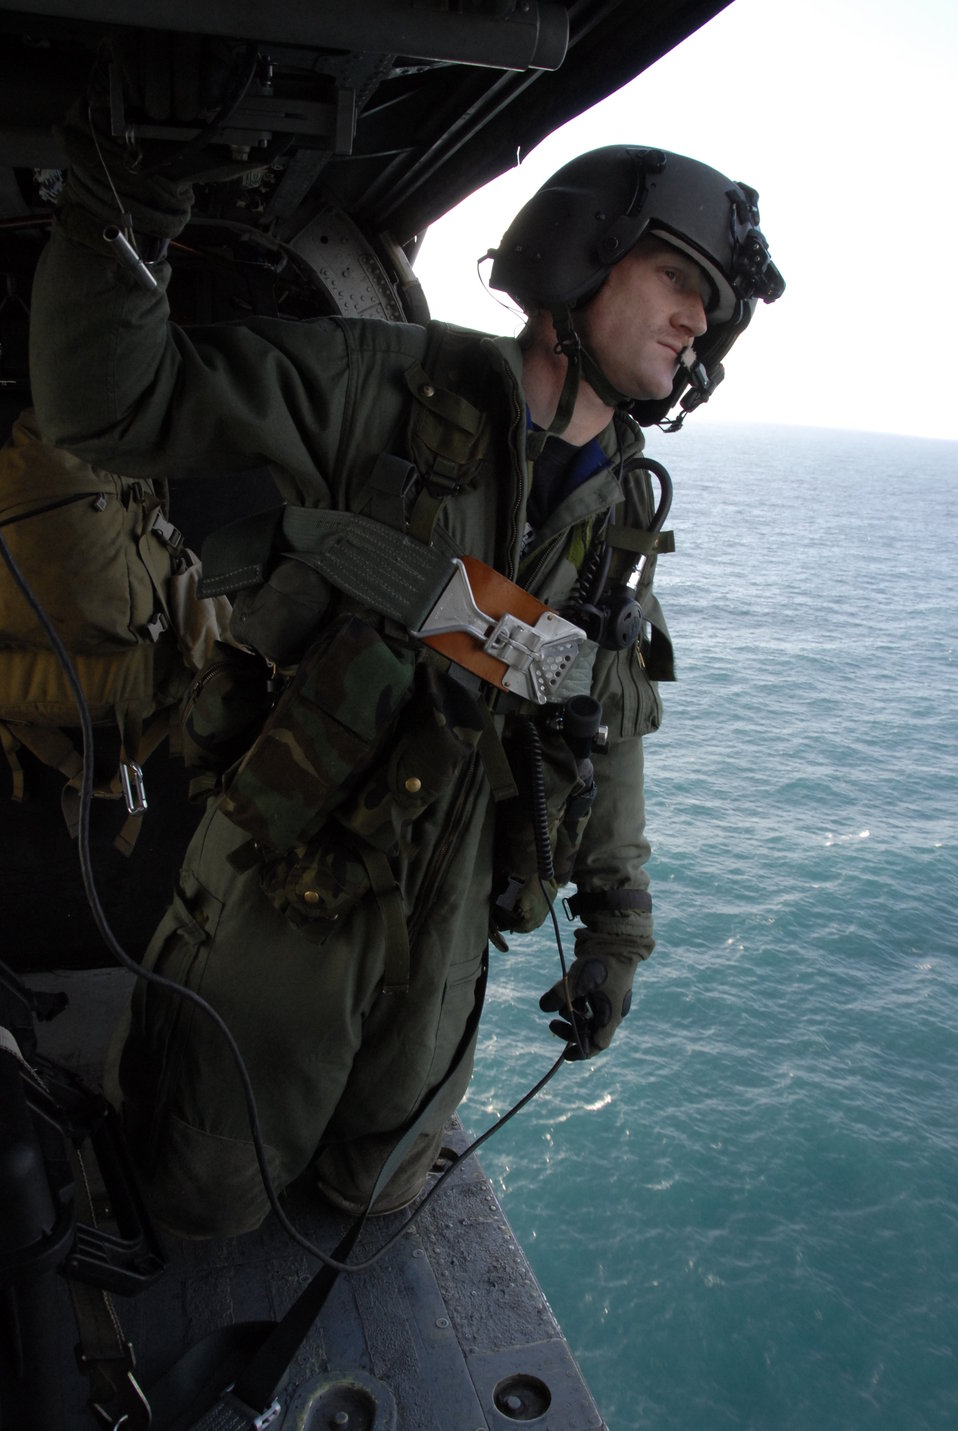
FARALLONS BATTERY MISSION

Staff Sgt. Joseph Kenney observes the surrounding area for flight safety during a flight to the Farallon Islands Feb. 17. The unit is supporting the U.S. Fish and Wildlife Service by transporting new photovoltaic batteries to power a lighthouse and workshop at the FWS research facility on the Farallon Island, which sits some 30 miles west of San Francisco. Sergeant Kenney is an HH-60G Pave Hawk helicopter flight engineer from the California Air National Guard's 129th Rescue Wing at Moffett Federal Airfield, Calif.